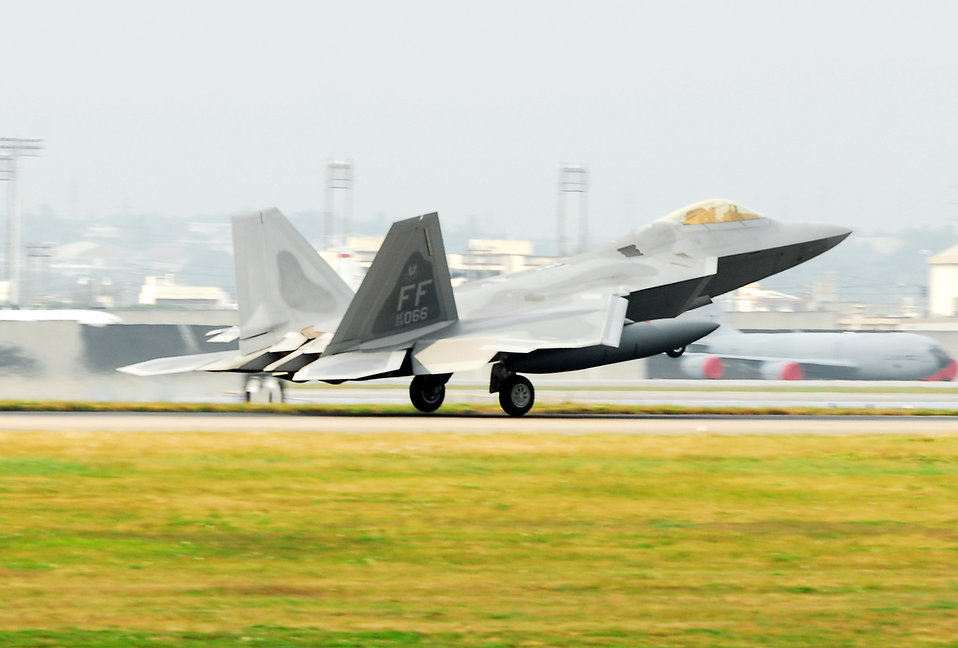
Raptors arrive at Kadena

An F-22 Raptor lands at Kadena Air Base, Japan, Feb. 18, marking the aircraft's first overseas deployment. The jet is one of 12 along with more than 250 Airmen deployed from Langley Air Force Base, Va., to Kadena as part of an air expeditionary force rotation.